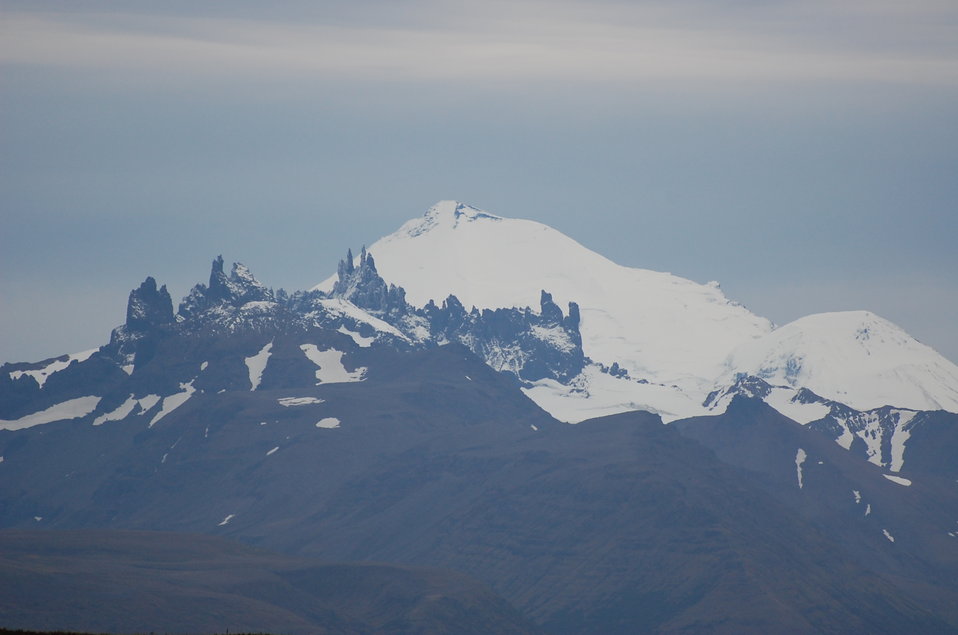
Aghileen Pinnacles and Pavlof Volcano

Izembek National Wildlife Refuge